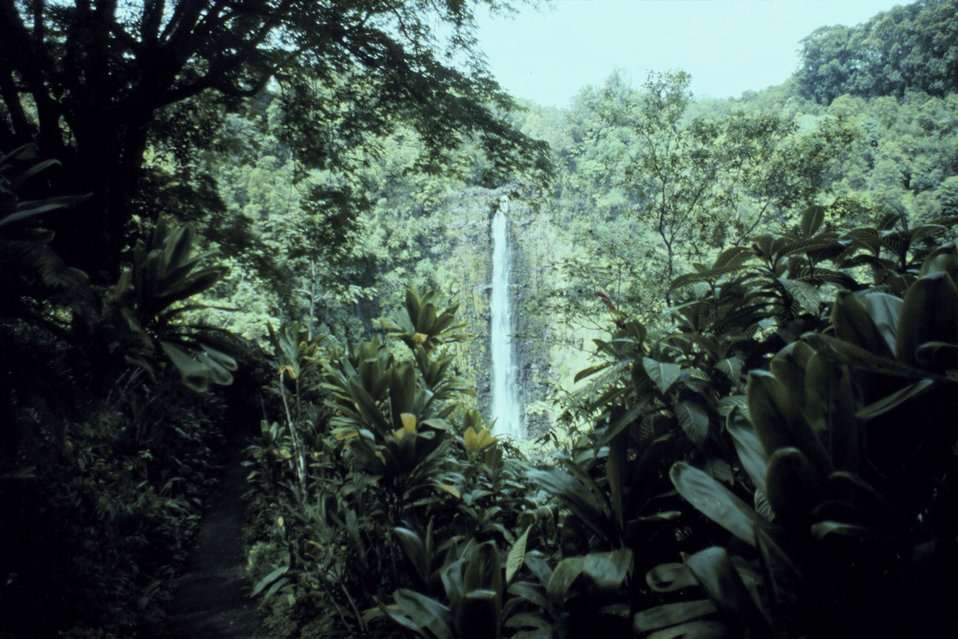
Akaka Falls